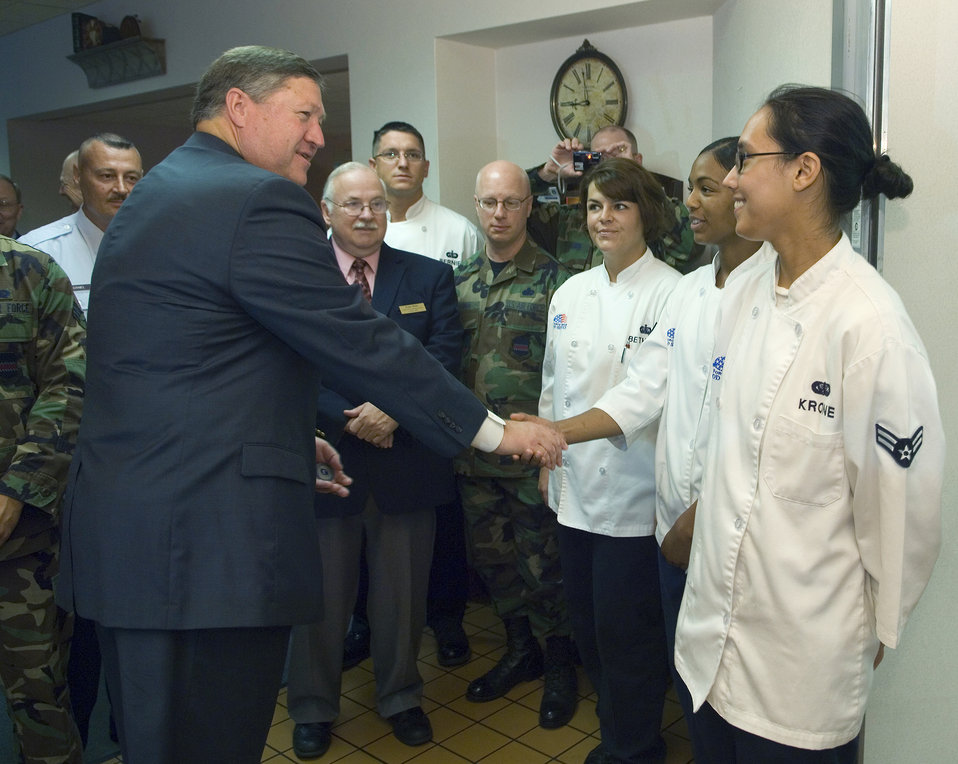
Air Force secretary meets veterans, addresses issues

Acting Secretary of the Air Force Michael B. Donley presents Senior Airman Brandy Griffith and fellow members of the 55th Force Support Squadron with a coin for excellence in preparing a senior leadership breakfast Aug. 11 at the Ronald L. King Dining Facility at Offutt Air Force Base, Neb.